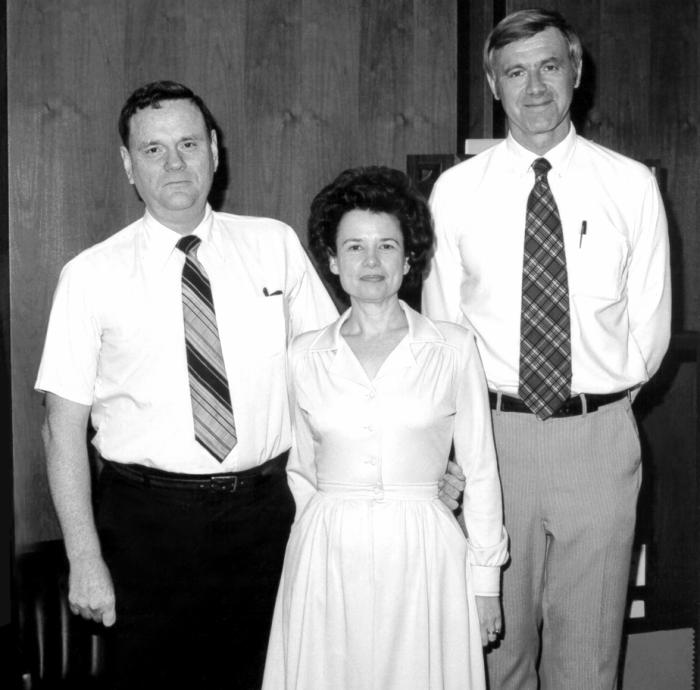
From left to right, this photograph showed Bill Griggs, Louise Griggs and, former CDC Director William H. Foege, M.D., M.P.H. William H. Foege, M.D., M.P.H. was the Director of the CDC 1977 - 1983. Dr. Foege was the Director of the Centers for Disease Control and Prevention, (CDC) from 1977 until 1983. He was an Epidemic Intelligence Service, (E.I.S.) Class of 1962 graduate, as well as the Director of the Global Smallpox Eradication Program from 1970 to 1973, and integral in formulating the strategies for eradicating smallpox from the world's population.